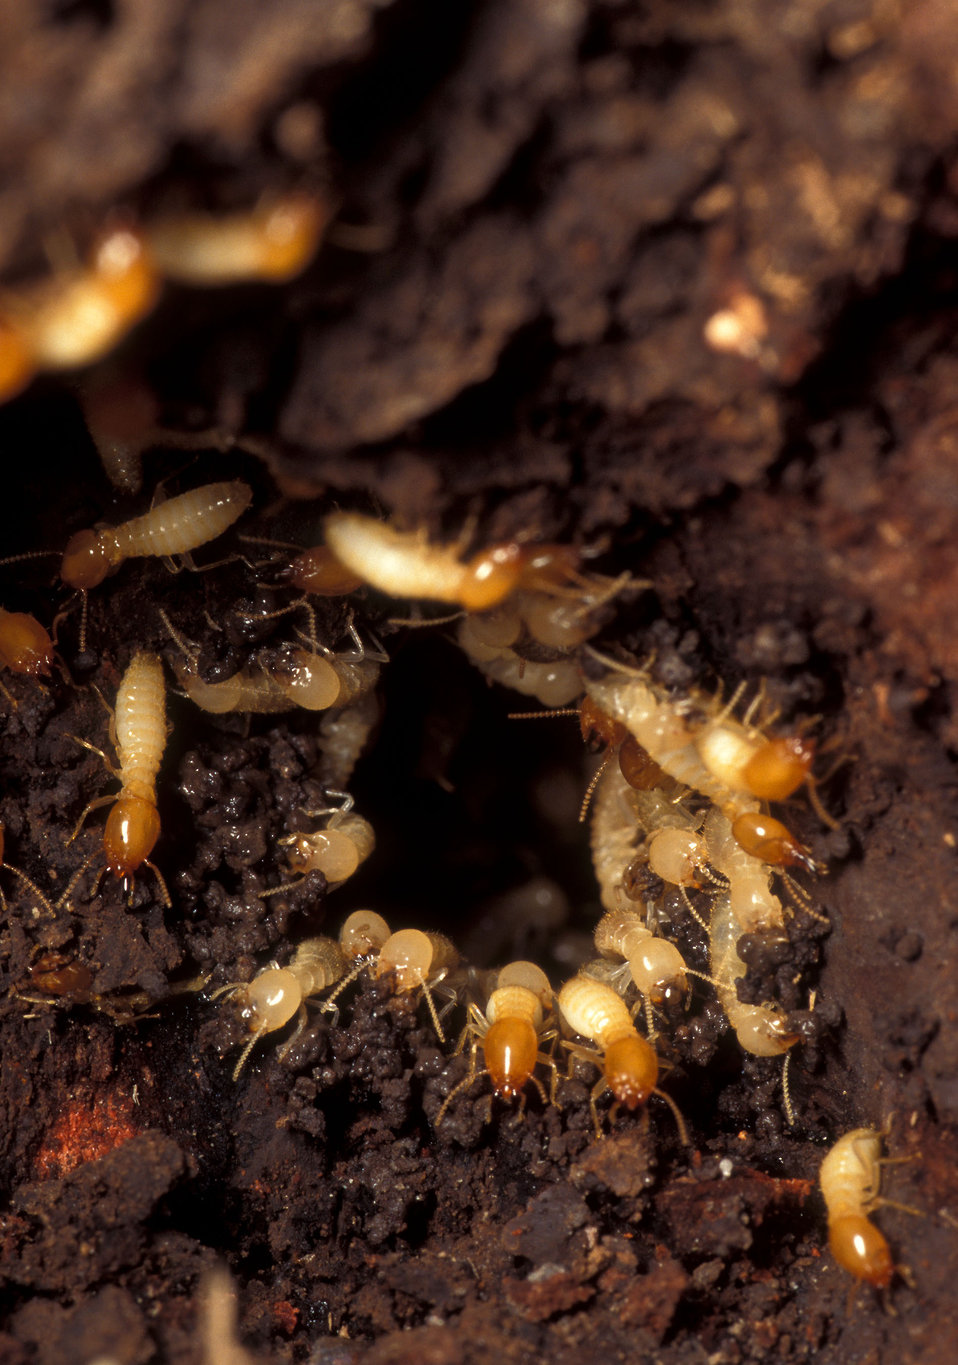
Damage to a nest of Formosan subterranean termites brings hoards of workers and soldiers with dark, oval shaped heads scrambling to repair the hole. (Termites shown about 4 times actual size)